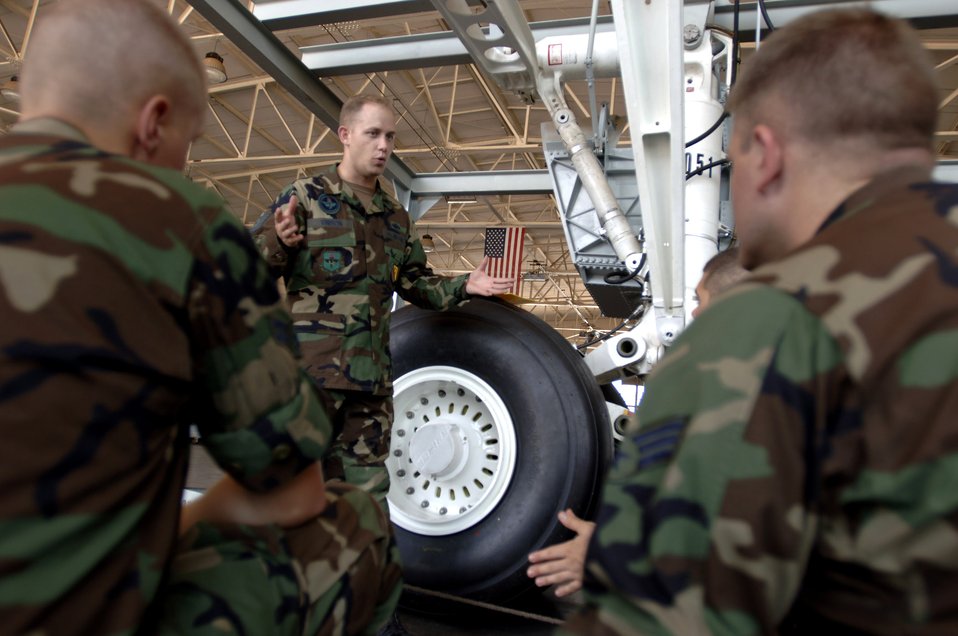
Flight builds training replicas, saves money

Tech. Sgt. Michael Vinson instructs Air Force technical training students on the maintenance of a KC-135 Stratotanker main landing gear using a fully functional training replica. Sergeant Vinson is an aerospace maintenance instructor at Sheppard Air Force Base, Texas.